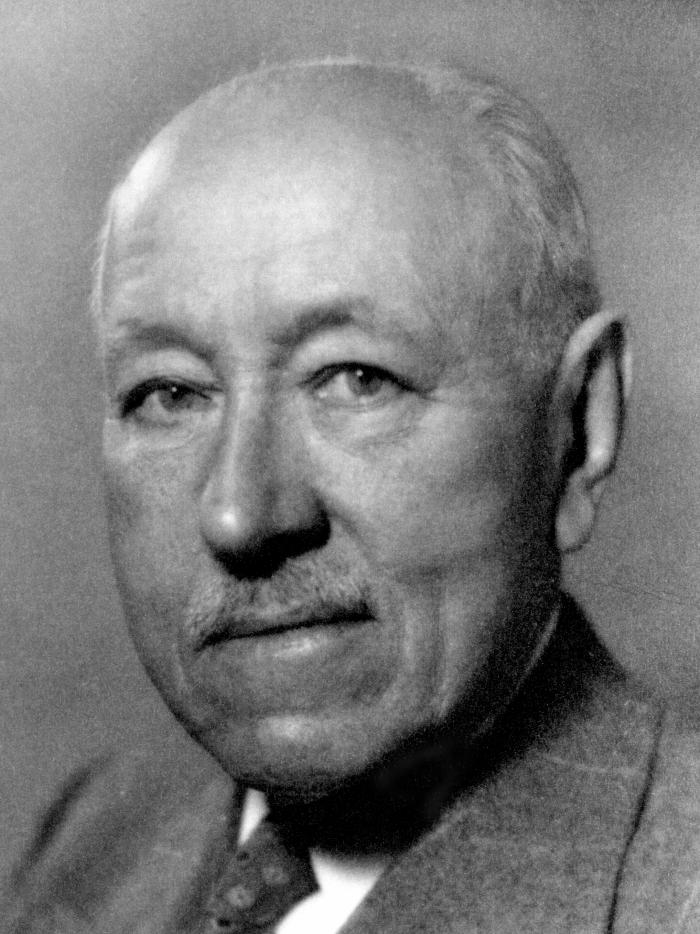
Dr. Frederick S. McKay's observations of the effects of fluoride in drinking water led to worldwide advances in dentistry.